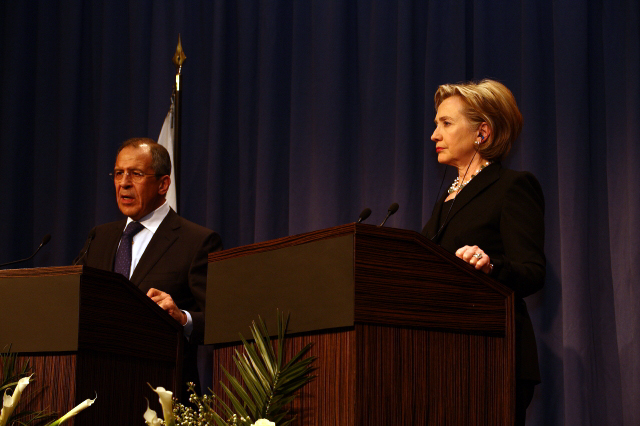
Press Conference With Russian Foreign Minister

Press conference after dinner meeting between U.S. Secretary of State Hillary Rodham Clinton and Russian Foreign Minister Sergey Lavrov in Geneva, Switzerland March 6, 2009.